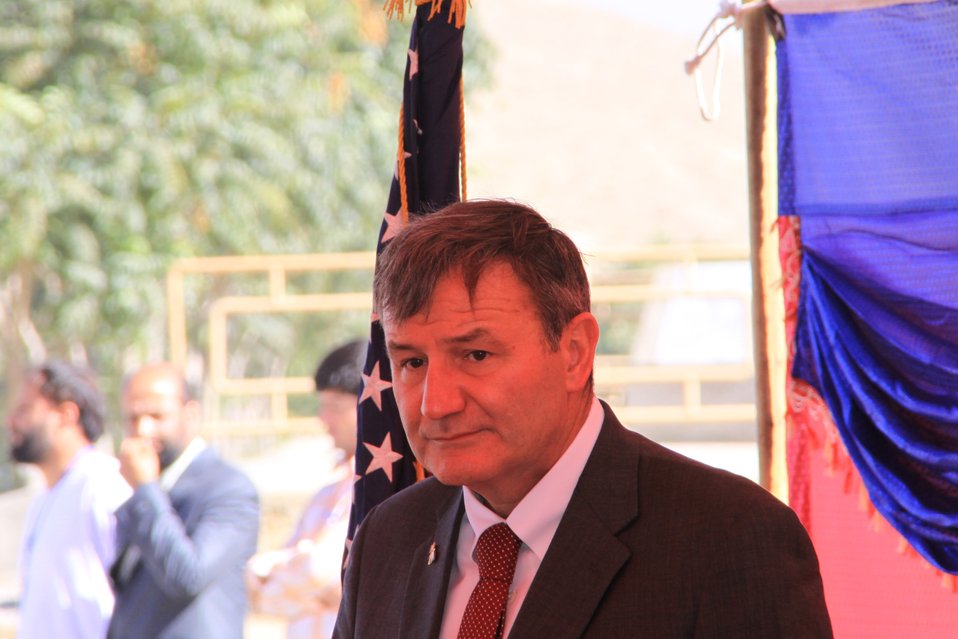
AVIPA Plus Wheat Seed Distribution 101005